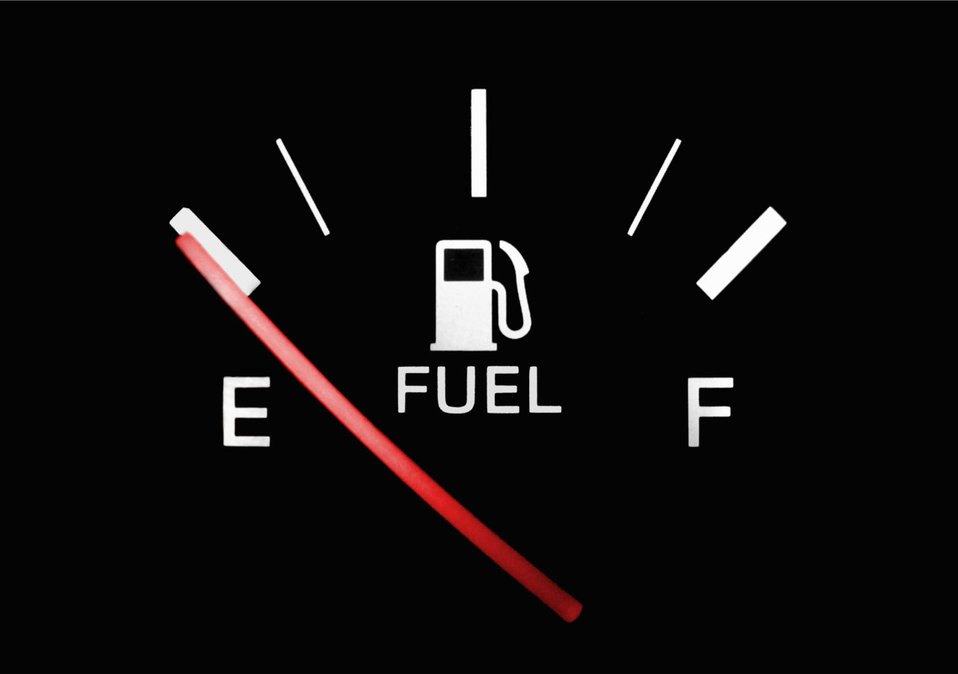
Empty

A fuel gauge pointing to empty.